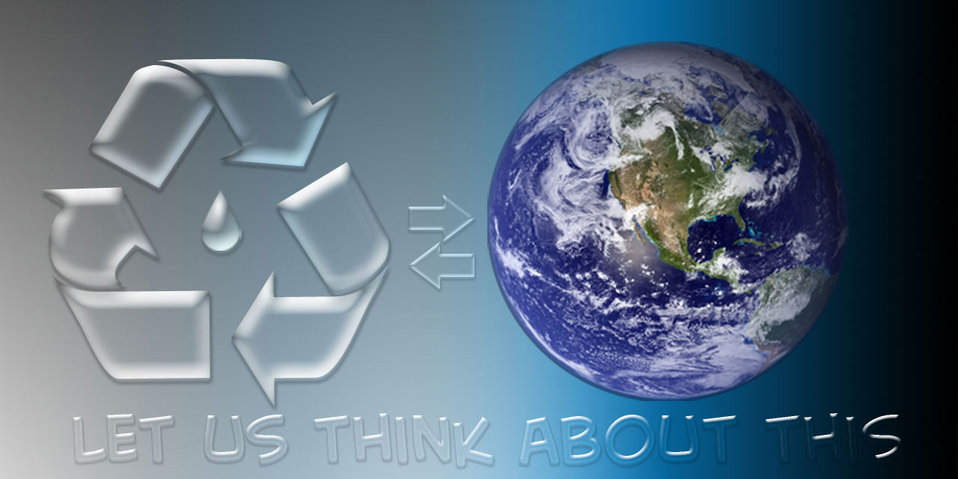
Think about it

For you and for me and the entire human race.